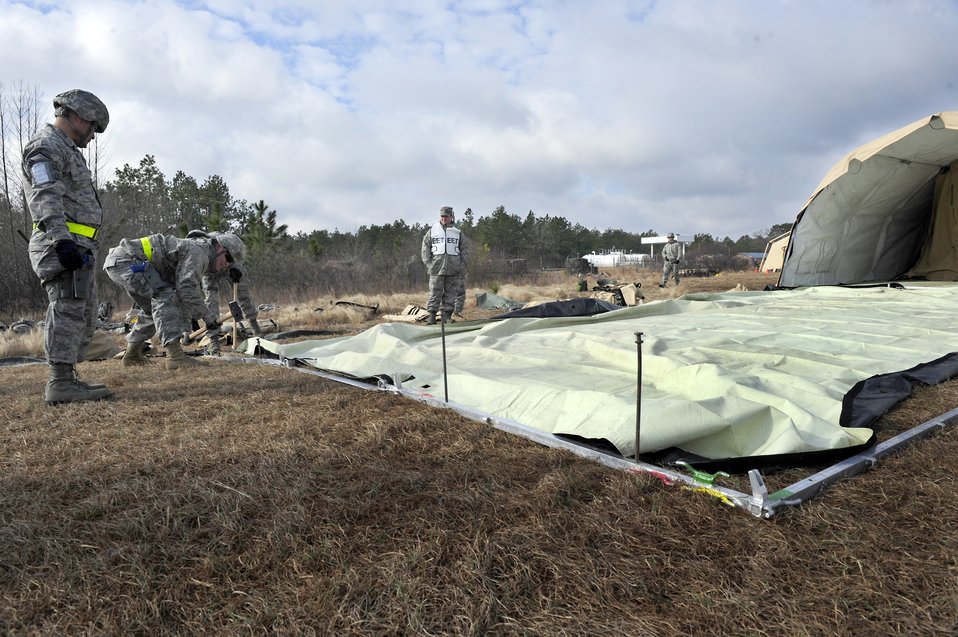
Joint operational access exercise

Airmen from the 570th Global Mobility Readiness Squadron set up an air base during a joint operational access exercise Feb. 10, 2011, near Fayetteville, N.C.